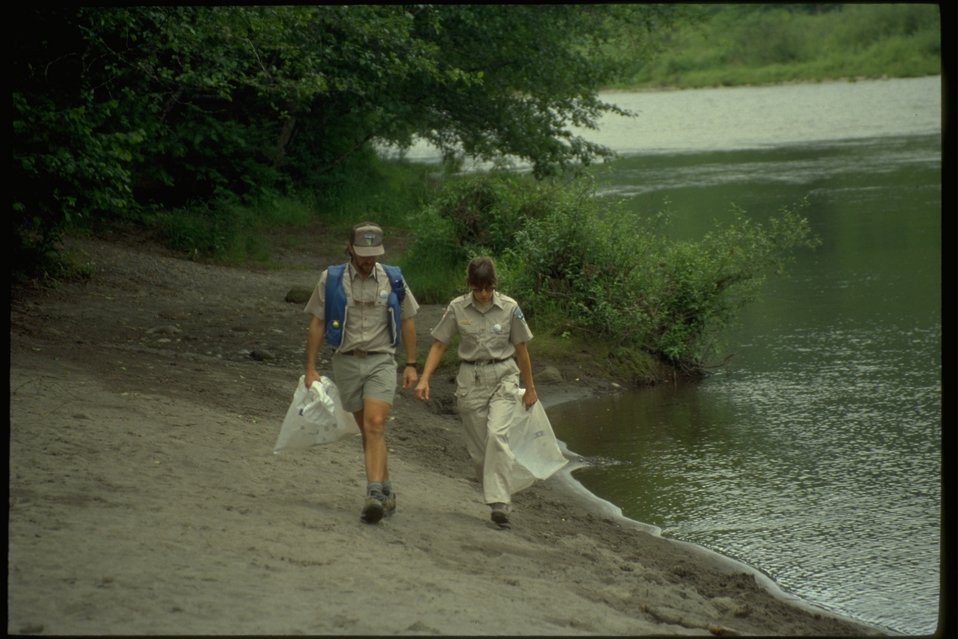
Picking up garbage along the Sandy River.